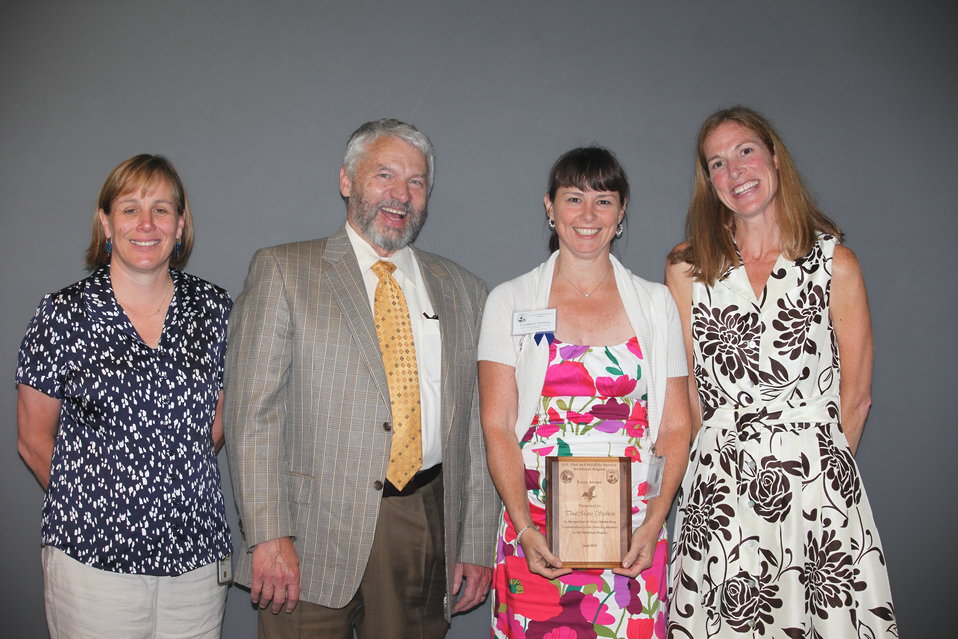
TinaMarie Steblein, Information Technology Management, recieved an Eagle Award.
From left to right: Deputy Regional Director Deb Rocque, Deputy Director Rowan Gould, TinaMarie and Regional Director Wendi Weber